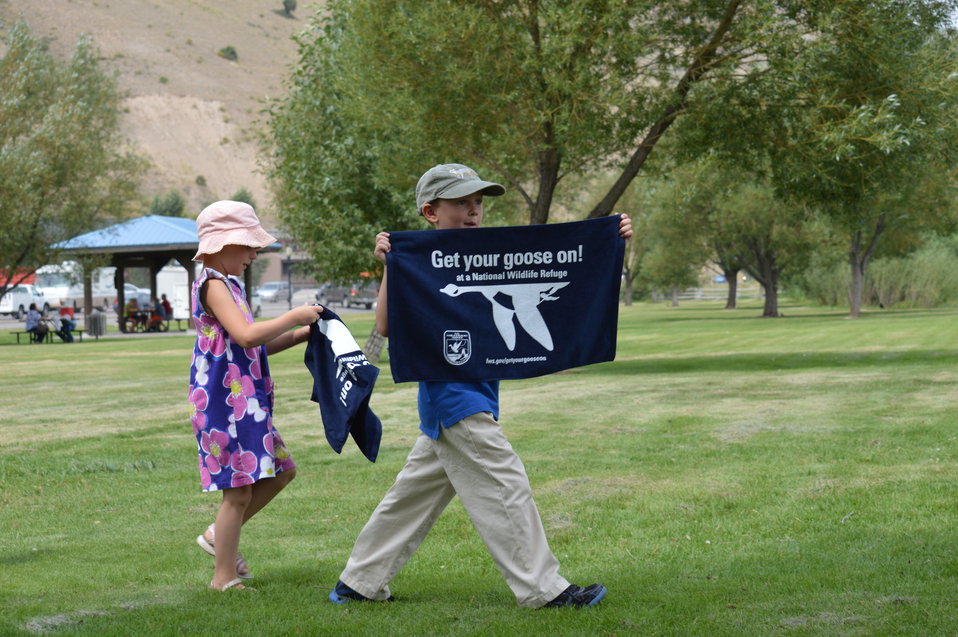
Get Your Goose On! - National Elk Refuge Style

On August 10, 2012 the U.S. Fish and Wildlife Service and Partners celebrated the 100 year anniversary of the establishment of the National Elk Refuge. In these photos, young attendees, along with Puddles the Blue Goose and the National Elk Refuge's mascot, showed us how to Get Your Goose On! with style.